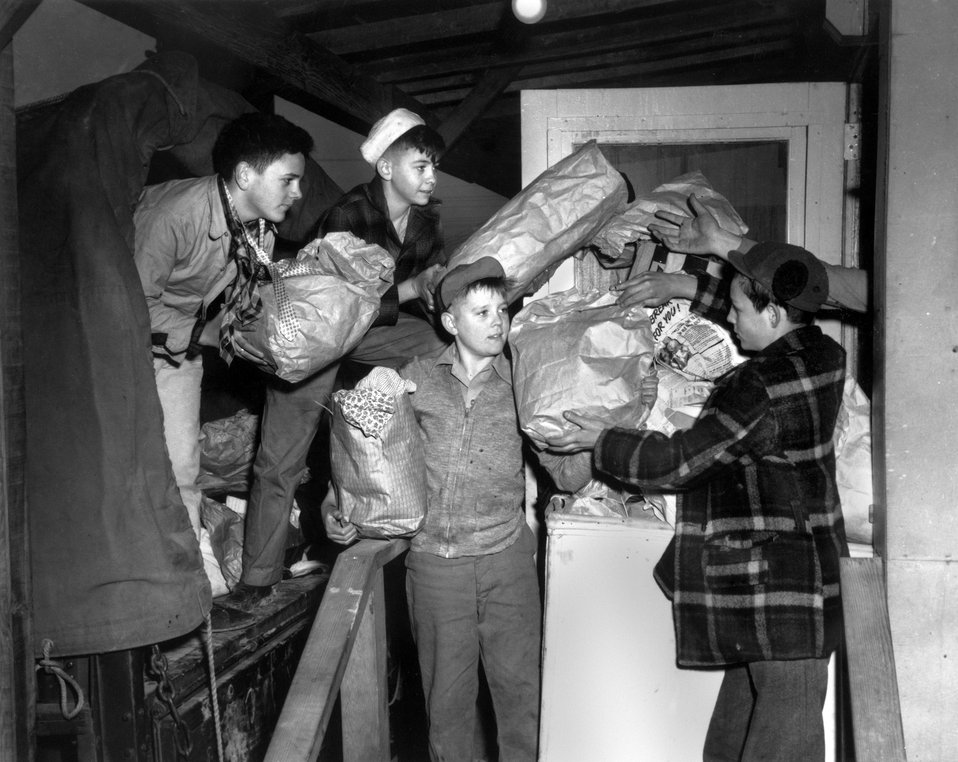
Victory Clothing Drive- Boy Scouts Oak Ridge

1404 DOE photo Ed Westcott Victory Clothing Drive- Boy Scouts Oak Ridge Tennessee 1-26-1946